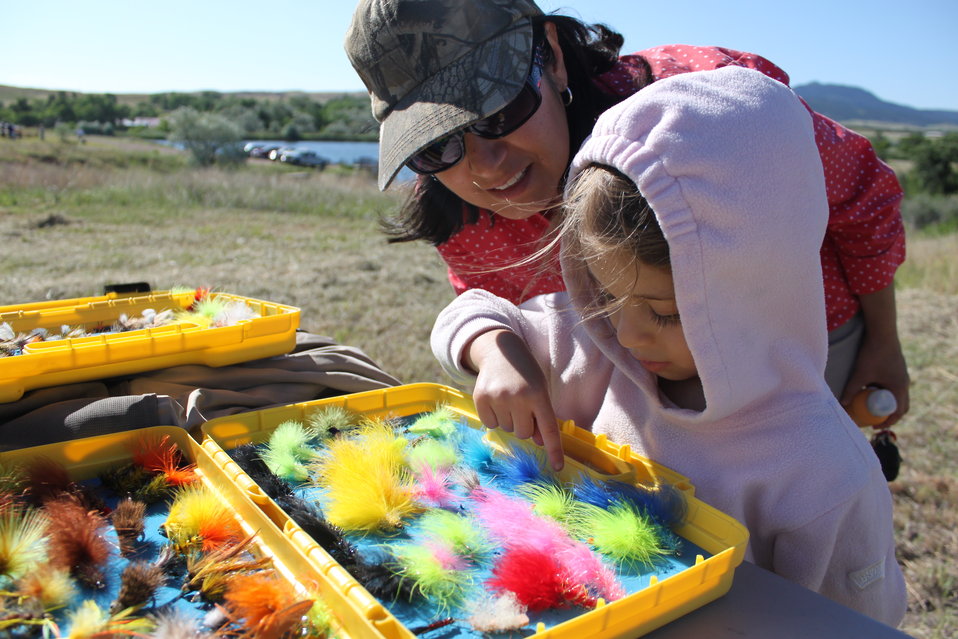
Mother and Daughter Learn About Flyfishing

A mother and child at Mirror Lake near Spearfish, South Dakota, learn about colorful flies during a National Fishing and Boating Week event. The event was co-sponsored by D.C. Booth Historic National Fish Hatchery & Archives.